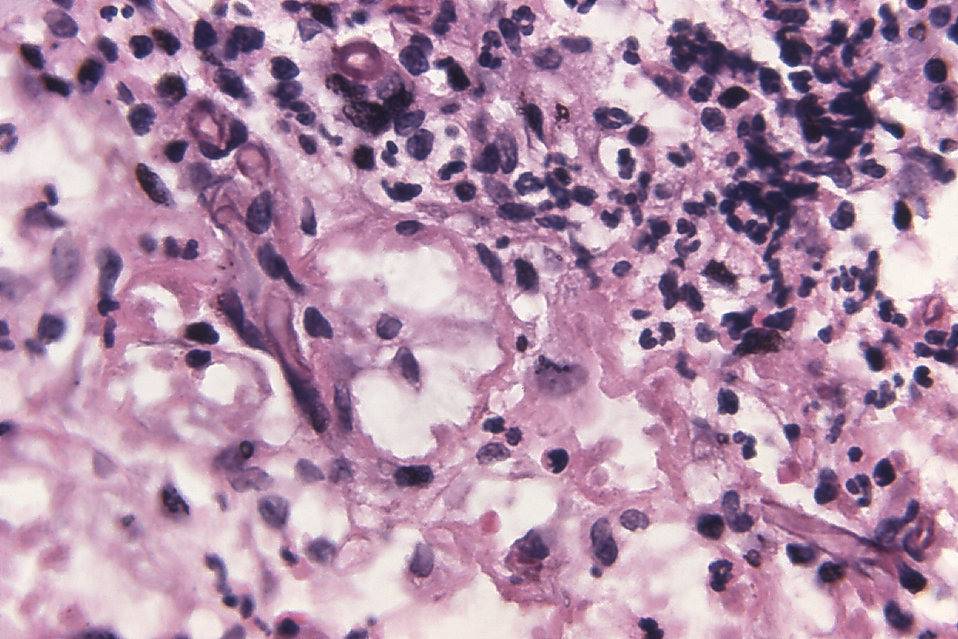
Magnified 500X, this photomicrograph revealed the presence of the fungal organism, Schizophyllum commune, which is made evident by the visible S. commune mycelium. The mycelium is composed of of numerous branching filaments known as hyphae, and is considered the vegetative portion of the mould.